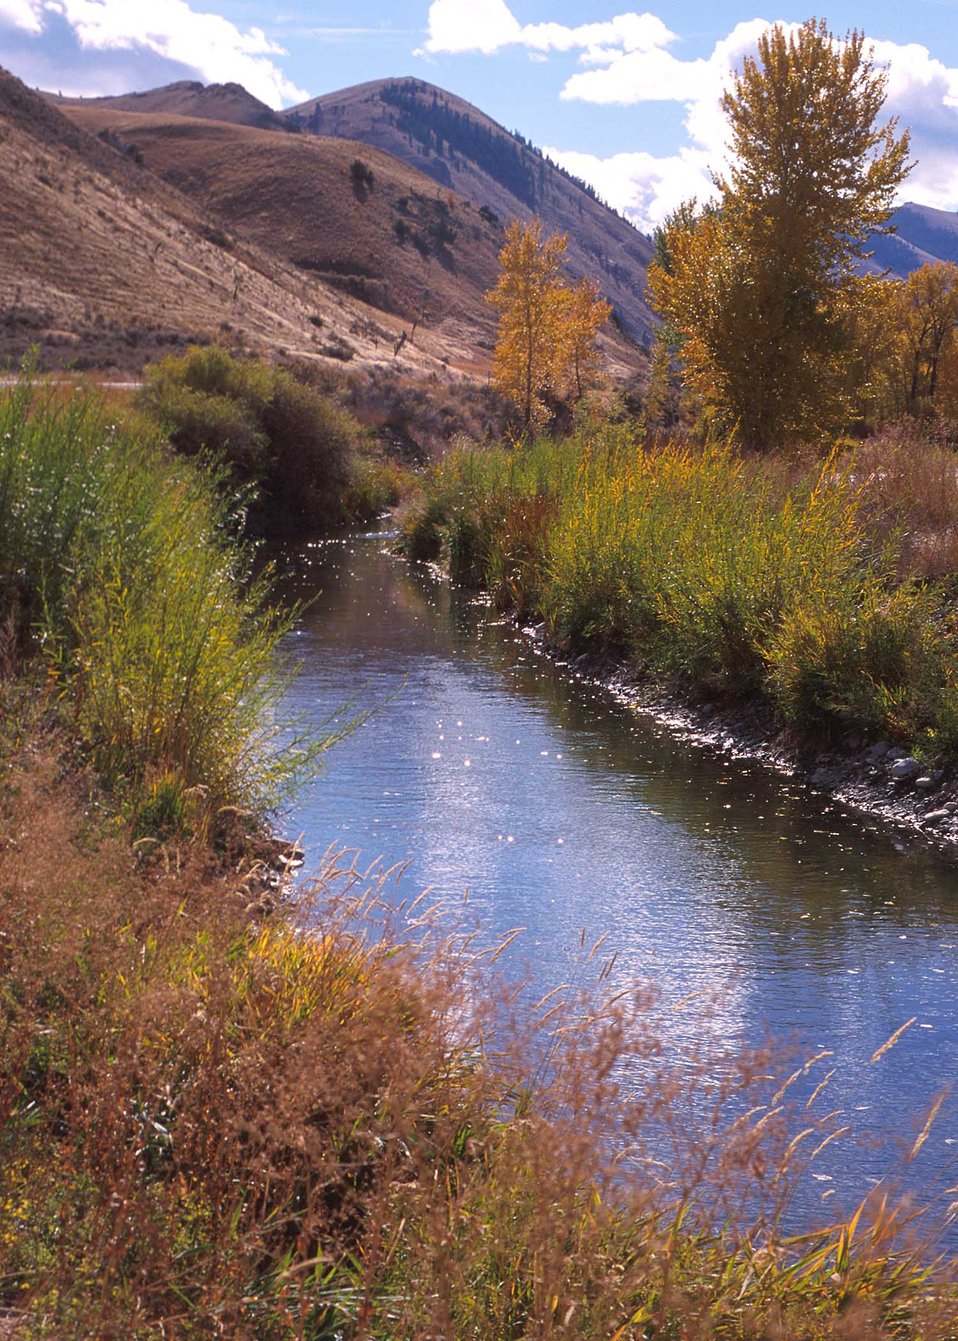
Ranchers in the Salmon Model Watershed are taking a pro-active stance to save the longest inland salmon runs in the world. Their actions will help restore the Lemhi River, shown, to its former status as prime salmon habitat.